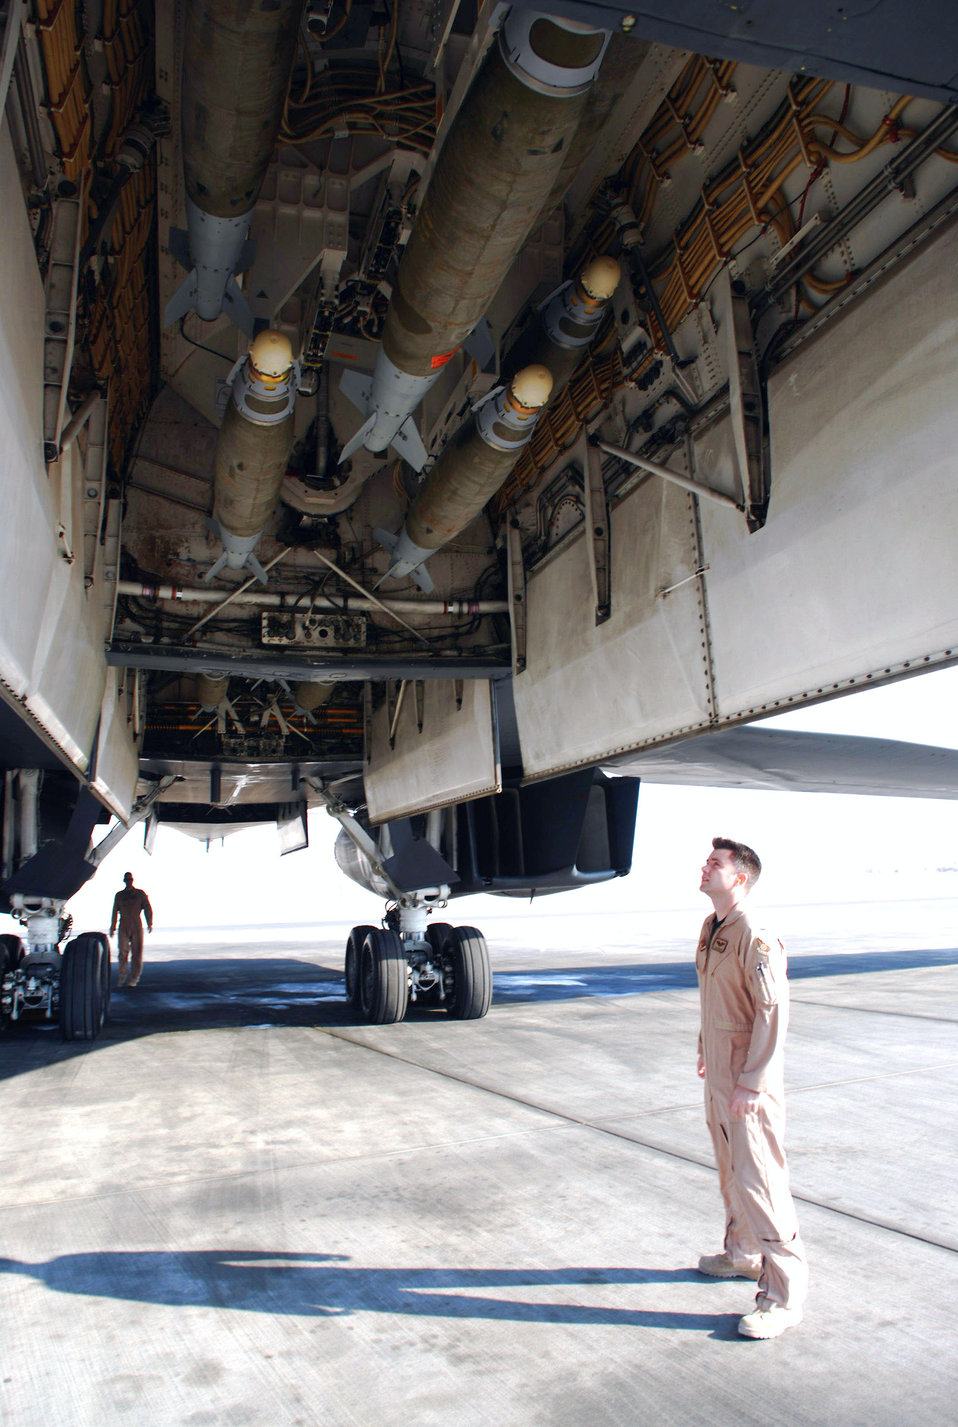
Feb. 21 airpower summary: B-1Bs destroy enemy combatants

First Lt. Jason Edwards checks the bomb load of a B-1B Lancer as he and the rest of the aircrew preflight check the bomber prior to a mission. Lieutenant Edwards is with the 9th Expeditionary Bomb Squadron at an air base in Southwest Asia.